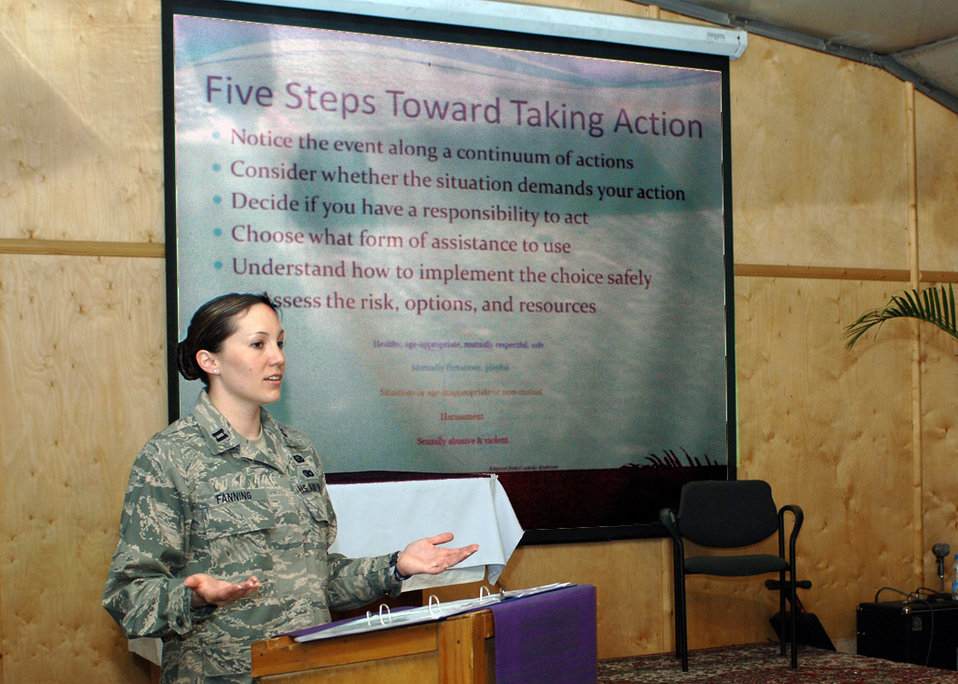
Manas members pledge to stop sexual assault before it starts

Capt. Jamie Fanning, 376th Air Expeditionary Wing sexual assault response coordinator, speaks at a workshop April 8 for a National Sexual Assault Awareness Month day of action at Manas Air Base, Kyrgyzstan. The 2009 SAAM focus,